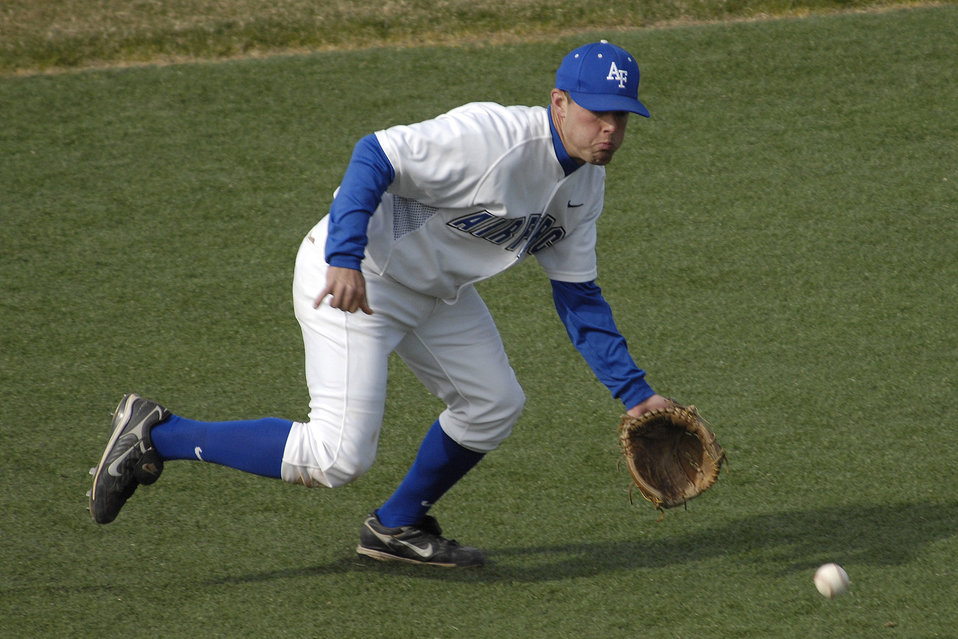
Air Force Rallies To 10th Inning Win Over Colorado Christian

Junior third baseman Jason Griggs scoops up a ground ball as the Falcons rallied to a 10th inning 9-8 win against Colorado Christian in non conference baseball action at the Academy's Falcon Field. Griggs went 2 for 3 at the plate as Air Force tallied 12 hits and did not commit an error in the field on the day. The Falcons improve to 11-19 on the season.